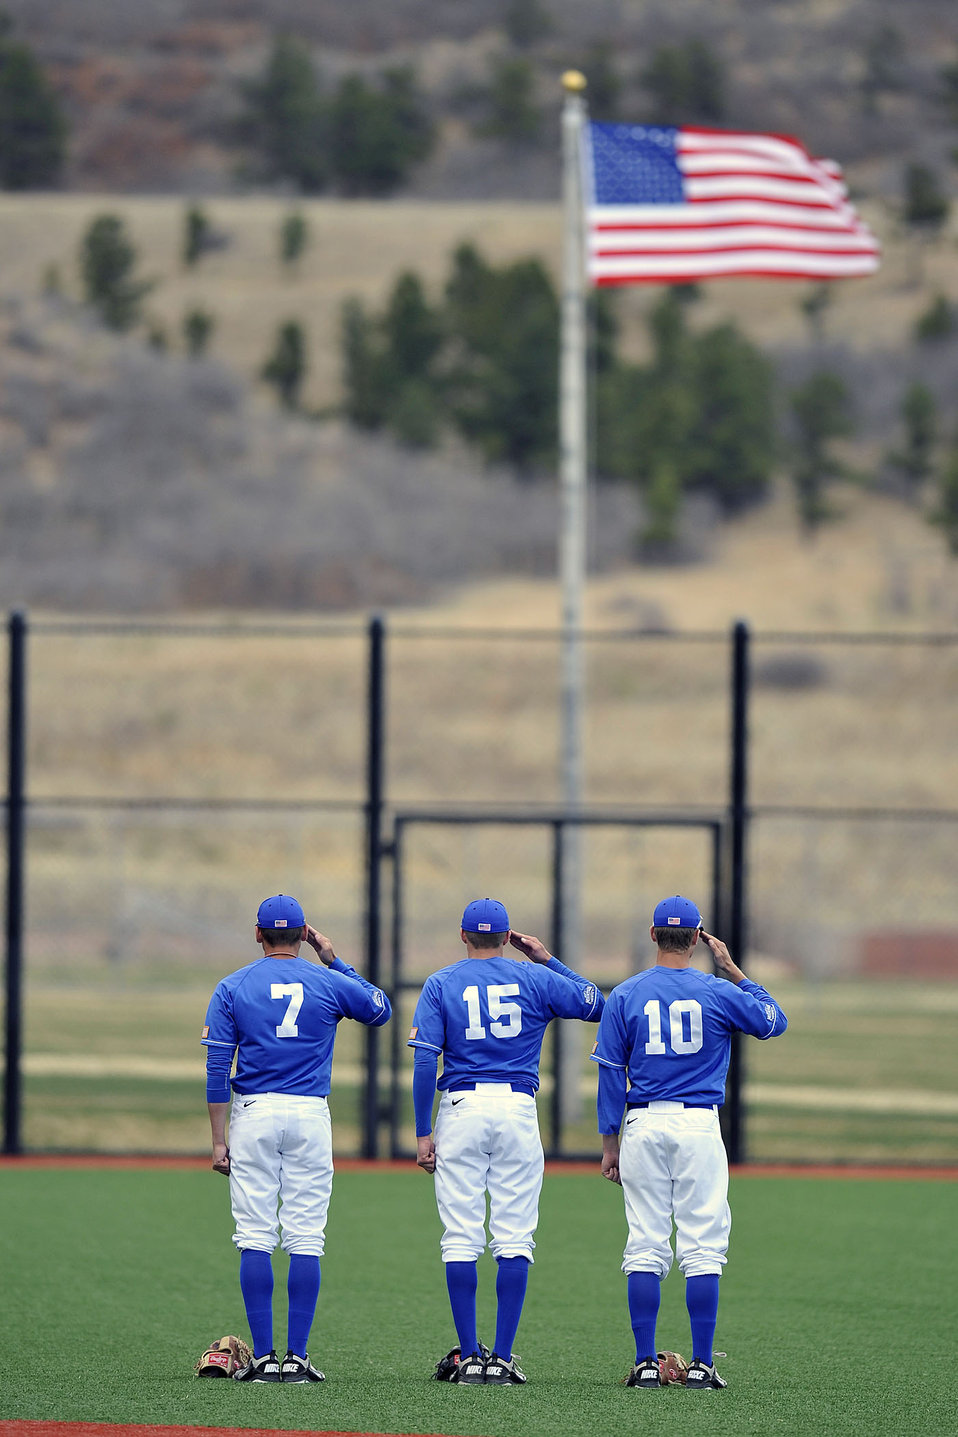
Falcons vs. Bears

Air Force Academy Falcons infielders salute during the playing of the national anthem, as the Falcons met the Northern Colorado Bears April 19, 2011, at Falcon Field in Colorado Springs, Colo. The Bears capitalized on a top-of-the-ninth home run to defeat the Falcons 6-5.